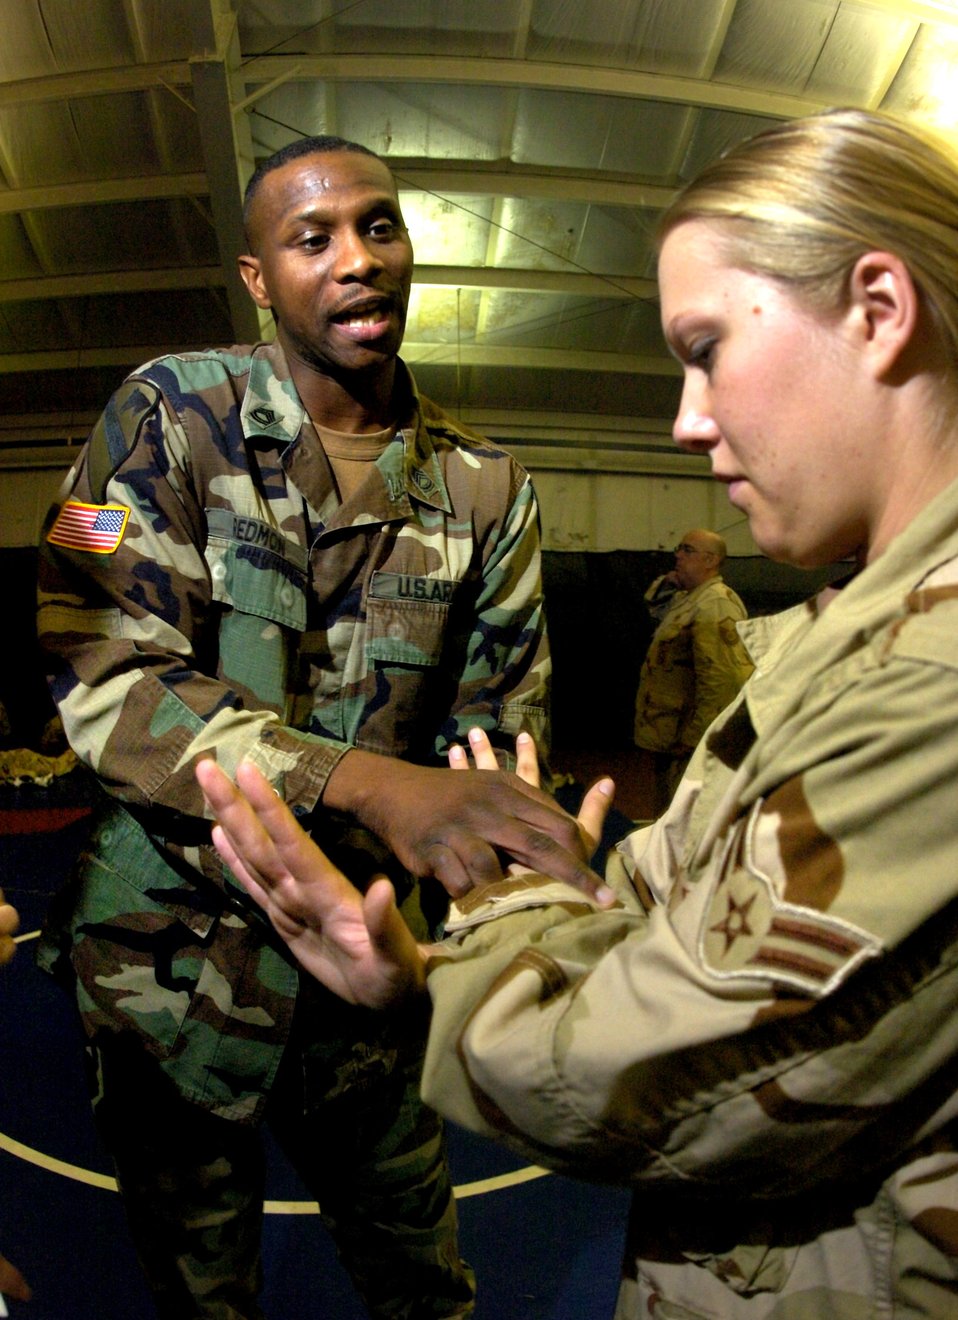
Learning detainee operations

FORT LEWIS, Wash. -- Army Sgt. 1st Class John Redmon (left) shows Airman 1st Class Rachel Kindvall the proper grip and technique when defending against an upward knife attack during a detainee operations training class here. Observer controllers like Sergeant Redmon are Soldiers with operational experience, dedicated to training servicemembers on how to safely care and control detainees with the least amount of force necessary. Airman Kindvall is assigned to the 55th Security Forces Squadron at Offutt Air Force Base, Neb.